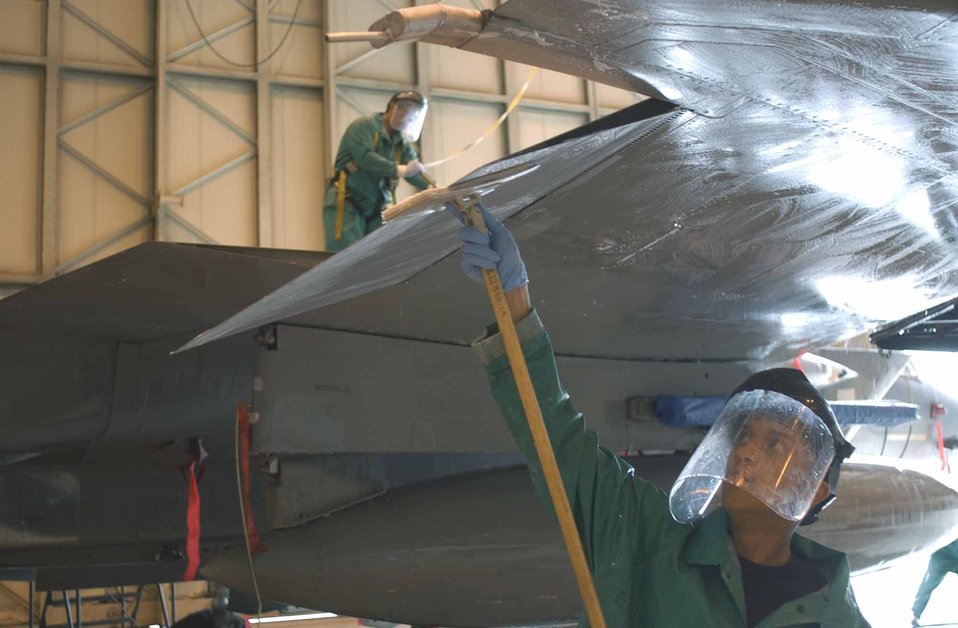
It's a wash

ELMENDORF AIR FORCE BASE, Alaska -- Airman 1st Class Errion Zanders (bottom) and Senior Airman Lance Claverie wash an F-15 Eagle from the 19th Fighter Squadron here during Northern Edge '04. About 9,000 Soldiers, Sailors, Airmen, Marines and Coast Guardsmen are serving as part of a joint task force practicing tasks associated with joint operations.